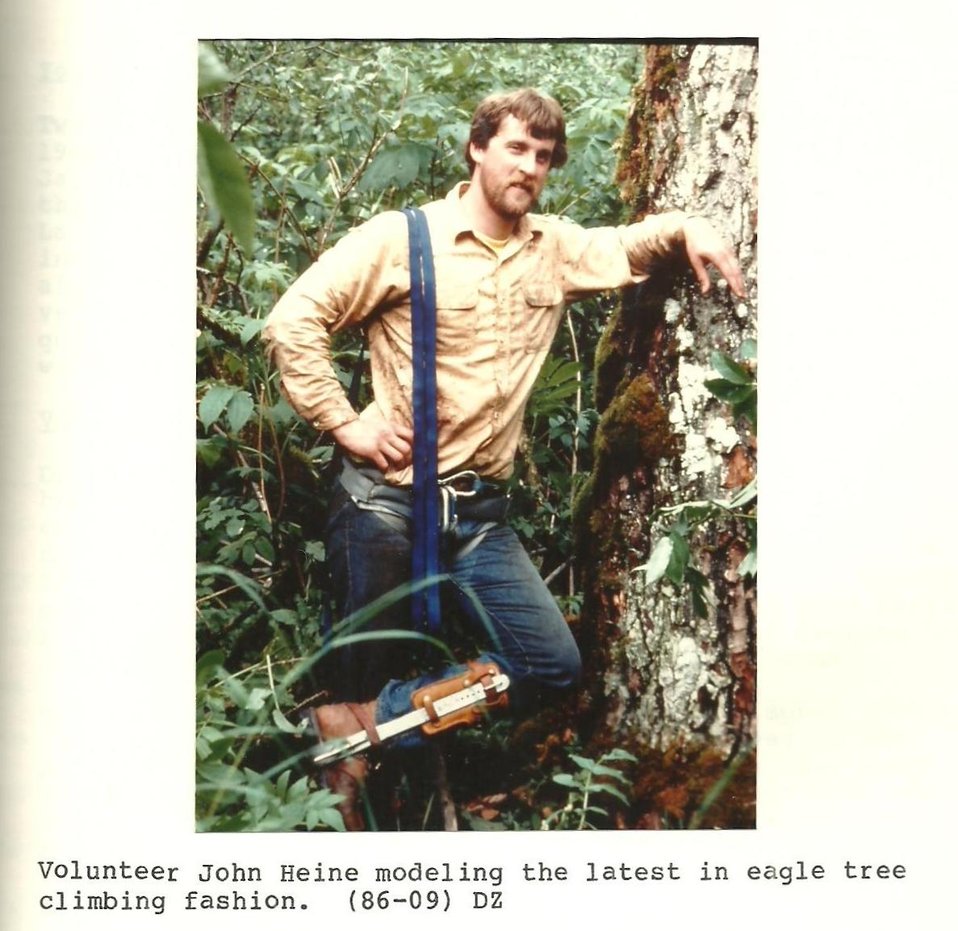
(1986) Fashionable Tree Climbing Gear

Credit: USFWS

Source and Contact: Kodiak National Wildlife Refuge